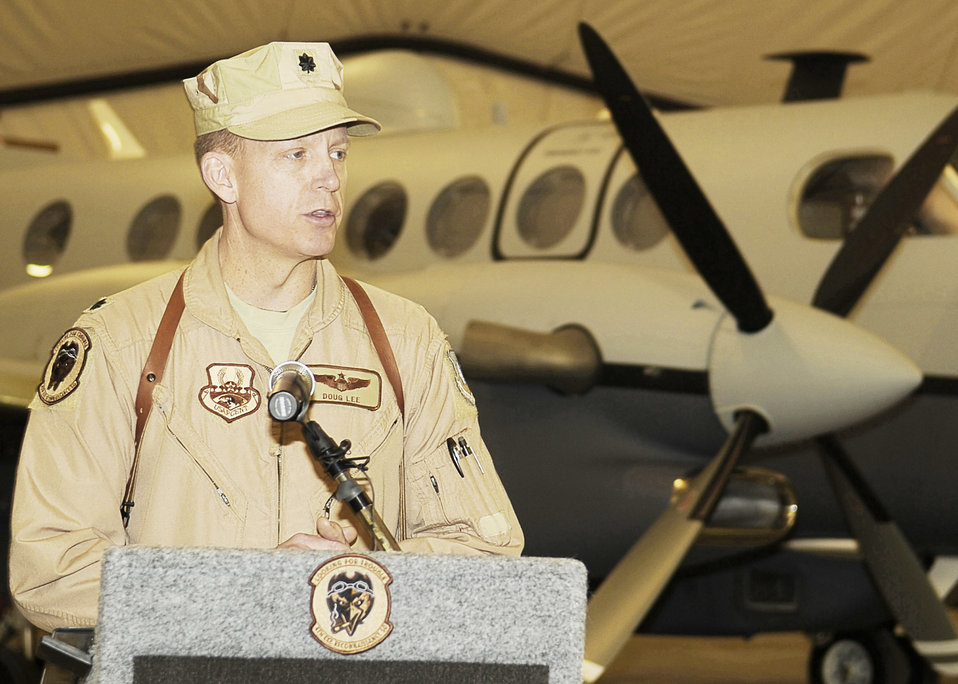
MC-12 arrival into the 455th Air Expeditionary Wing

Lt. Col. Douglas Lee speaks at the Dec. 27, 2009, activation cermeony for the 4th Expeditionary Reconnaissance Squadron at Bagram Airfield, Afghanistan. Colonel Lee is the commander of the new 4th ERS.